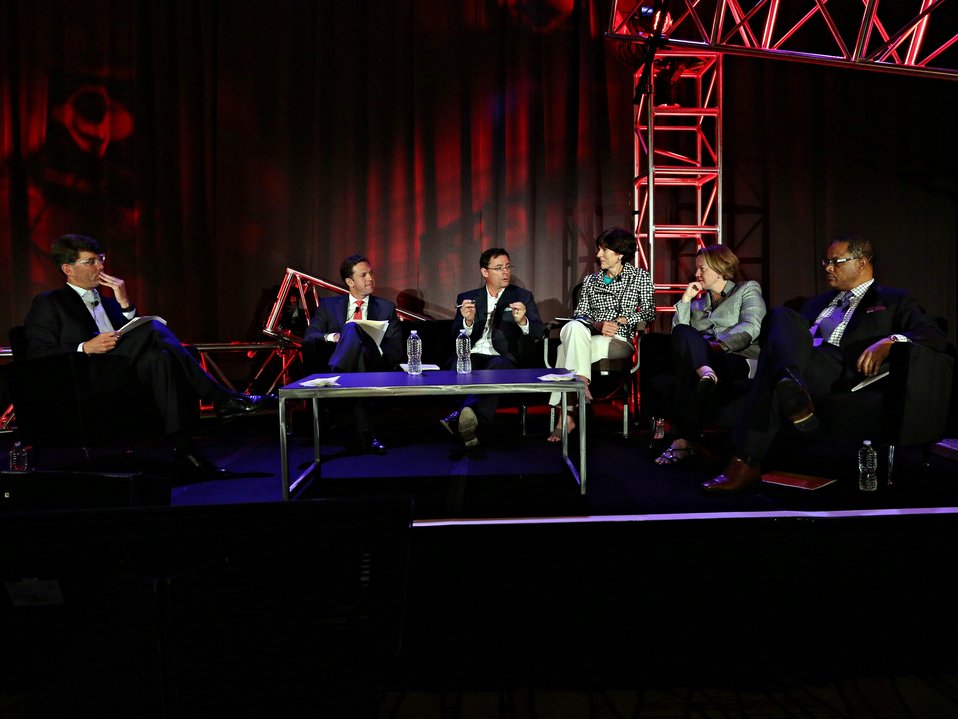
Day 2 Keynote Session 14

Day 2 headlining panel - SunShot Initiative: The Future is Bright